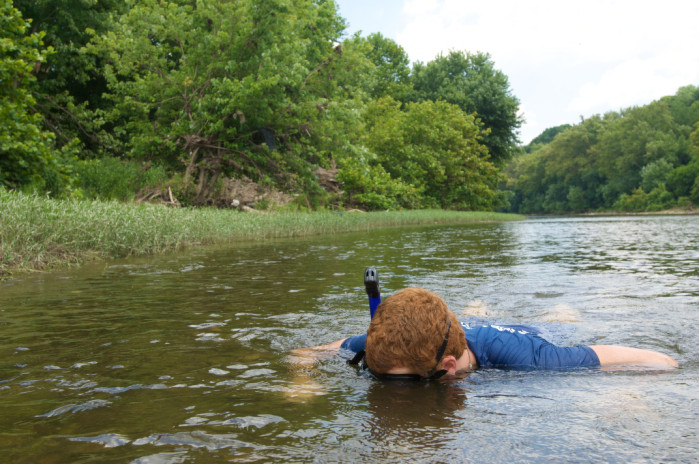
Potomac snorkeler